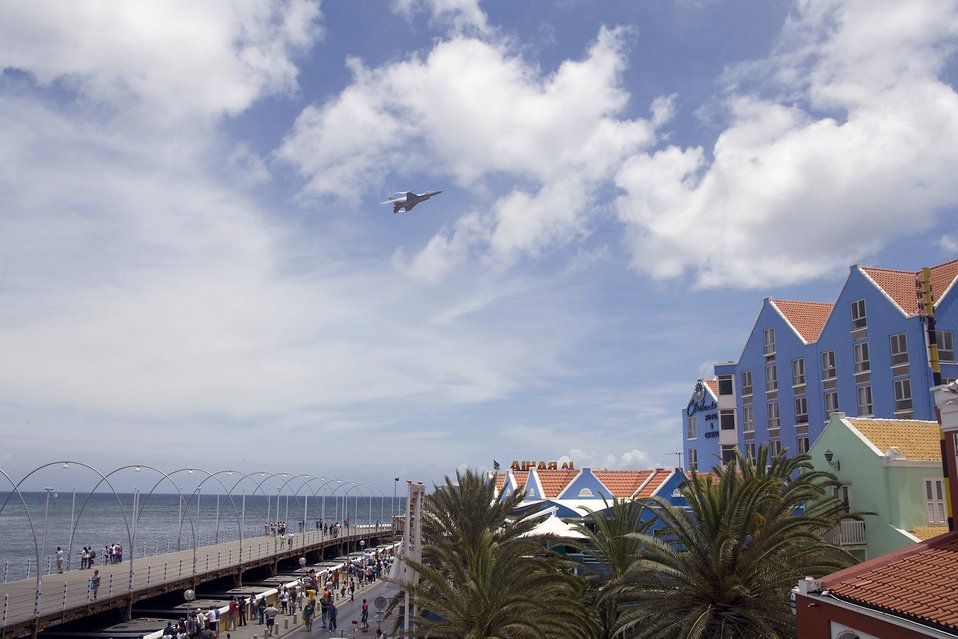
Dutch Navy Days

An F-16 Fighting Falcon, flown by Capt. George Clifford of the Viper East F-16 demonstration team, flies over Curacao, Netherlands Antilles. The Viper East team, from Shaw Air Force Base, S.C., joined officials from Air Forces Southern headquarters at Davis-Monthan AFB, Ariz., to augment